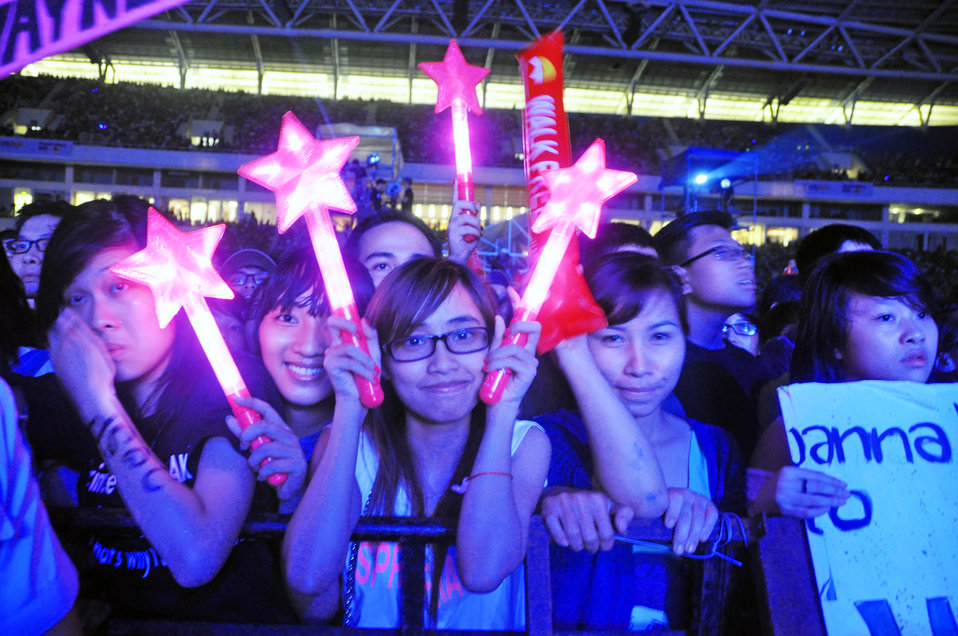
MTV EXIT concert fans see the stars come out against human trafficking and exploitation

USAID supports MTV EXIT concert against human trafficking and exploitation